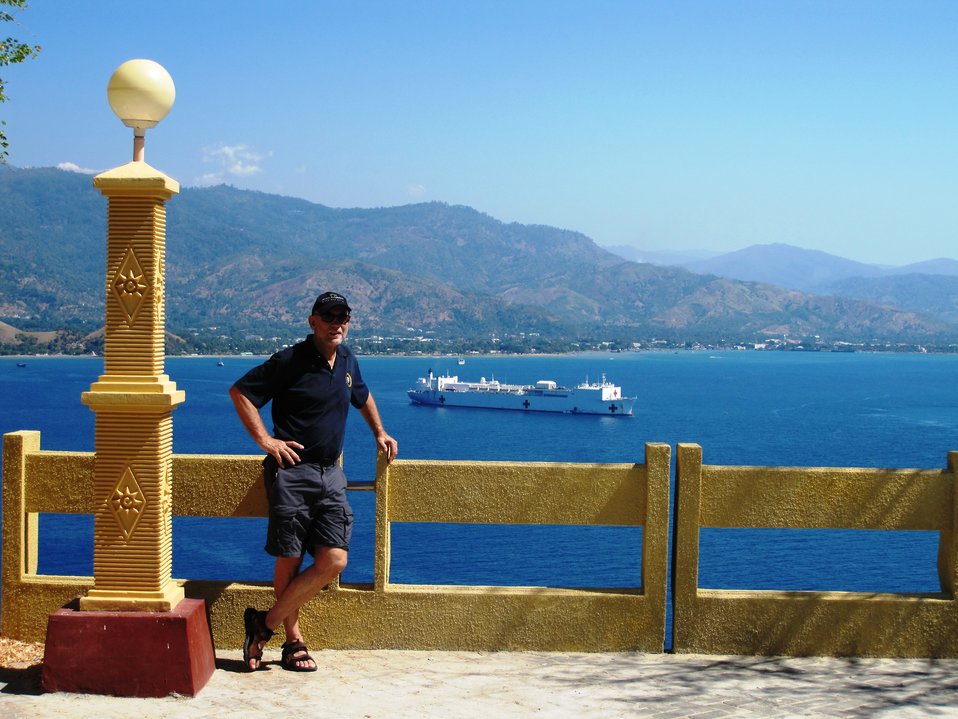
PP 2010 FSLO Weinz Poses for a Photo in Dili, Timor-Leste

Pacific Partnership 2010 Foreign Service Liaison Officer Tom Weinz poses for a photo at an overlook near Dili harbor in Dili, Timor-Leste, with USNS Mercy anchored in the background in August 2010.